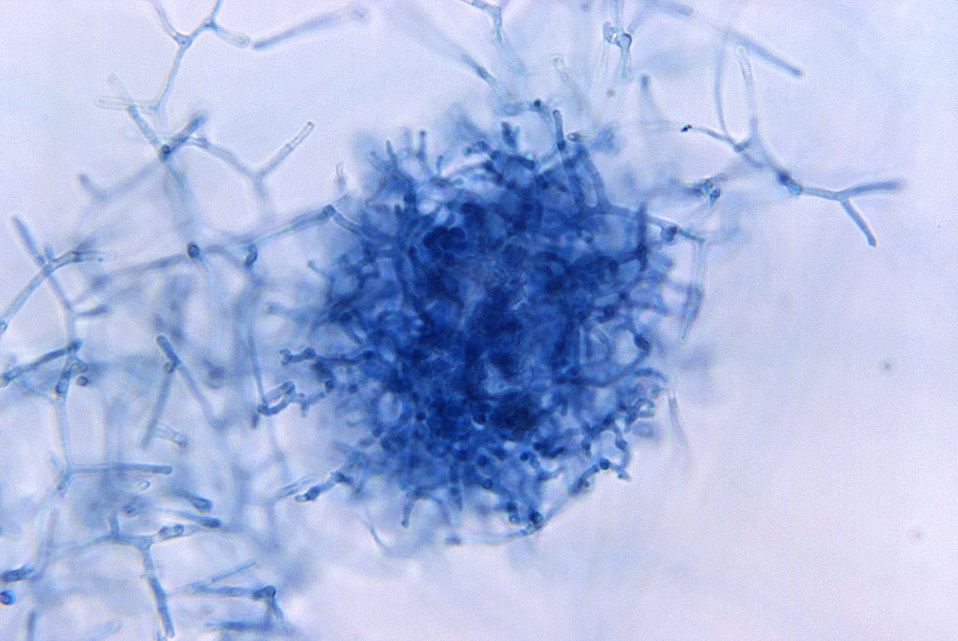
Under a relatively-low magnification of 166X, this photomicrograph revealed some of the ultrastructural morphology displayed by a developing young Gymnoascus demonbreunii cleistothecium, including the tightly-woven hyphae of this fungus.